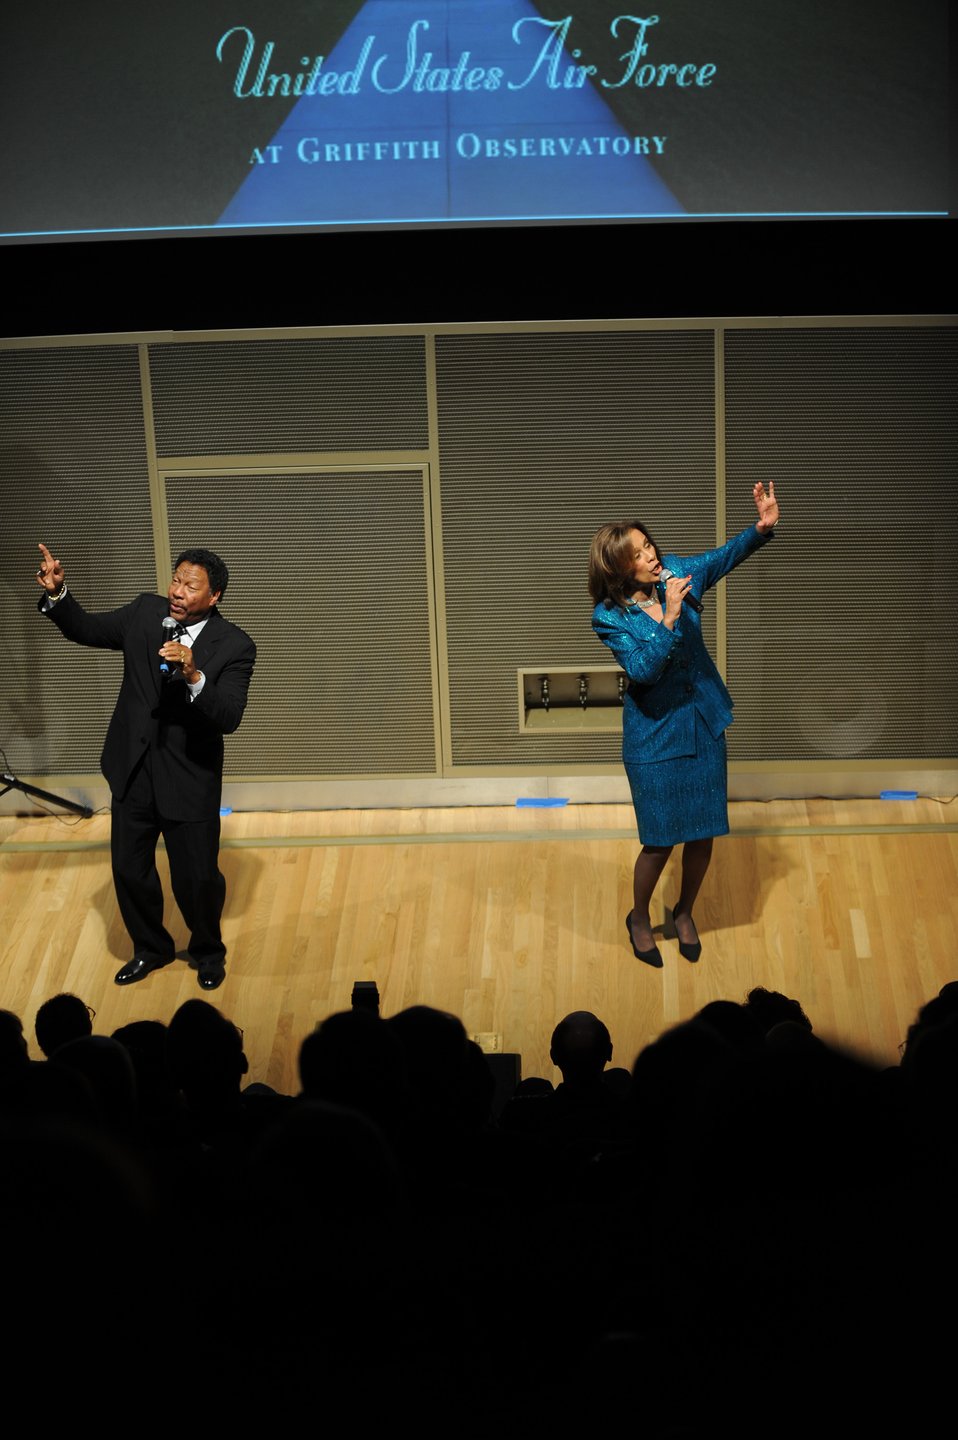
Stars visible at, from LA observatory

Marilyn McCoo and Billy Davis Jr. sing